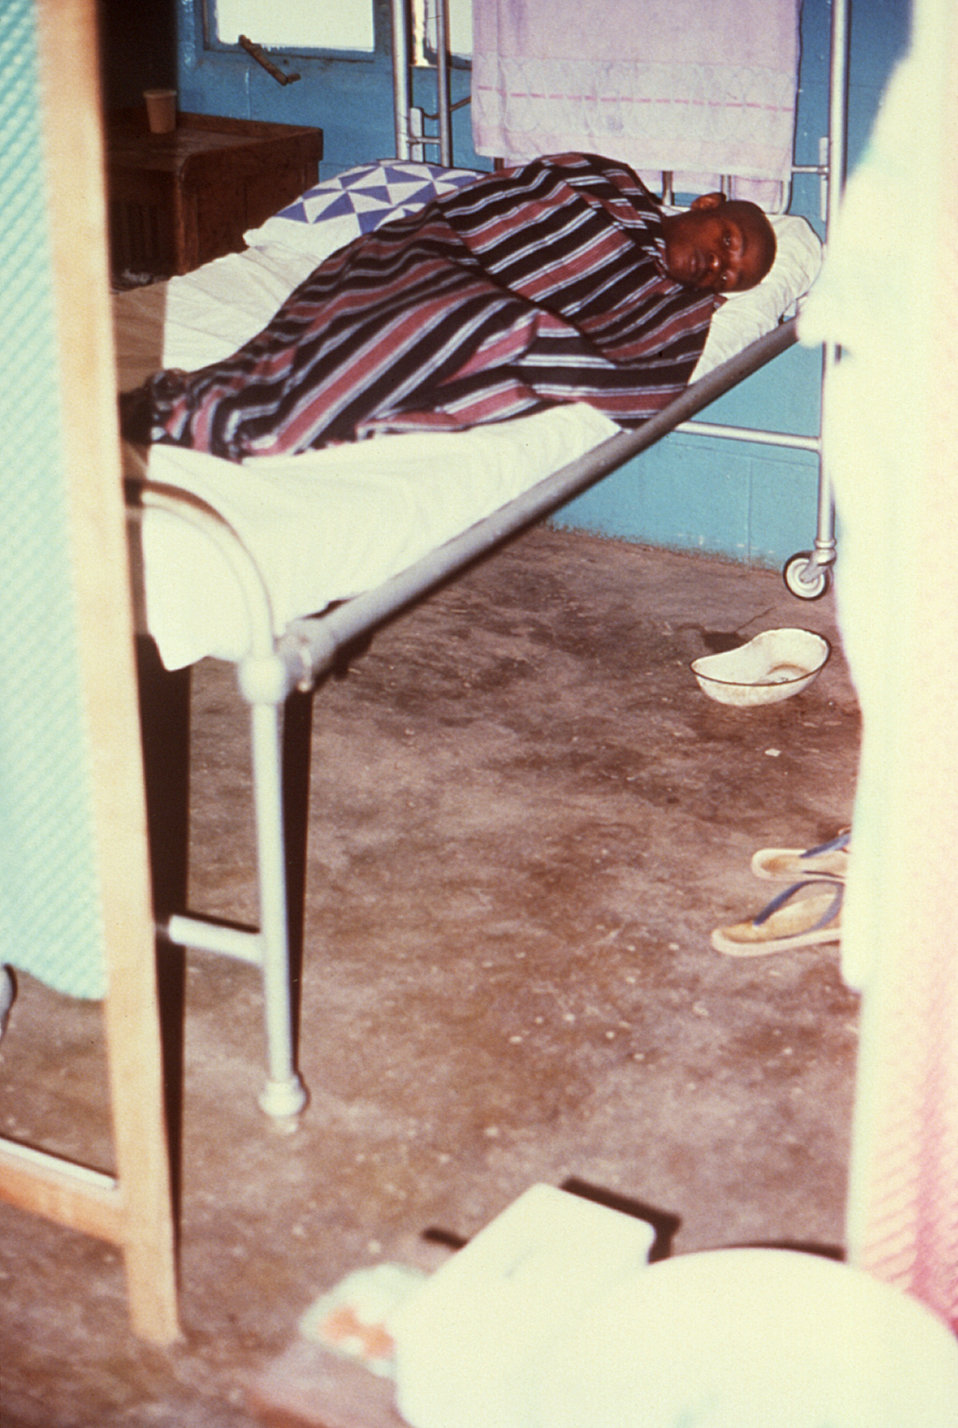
This 1977 image depicts a Lassa fever patient as he receives treatment on a male wing of the Segbwema, Sierra Leone clinic.